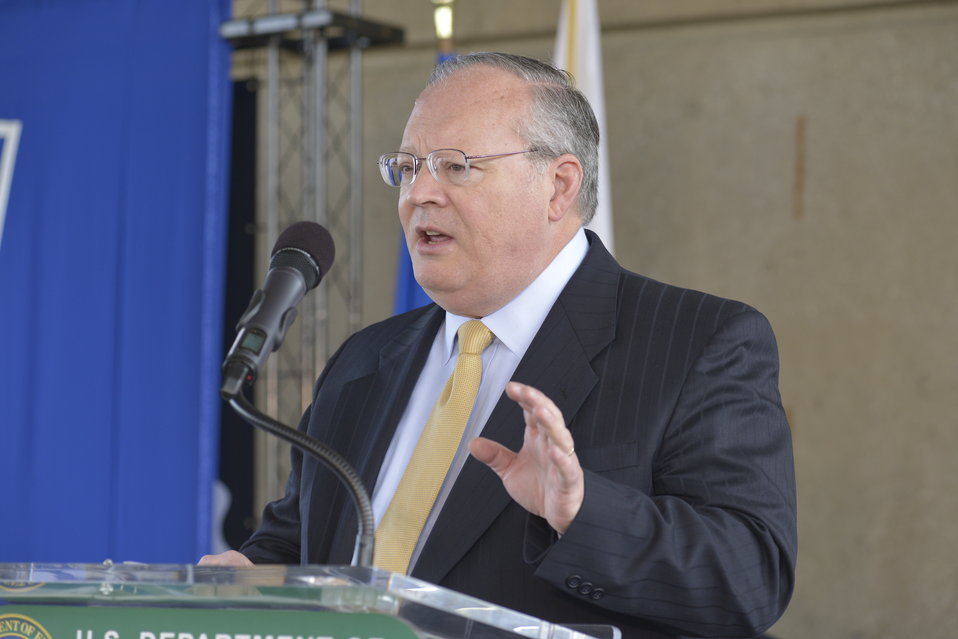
U.S Postal Services introduces a new Global: Sea Surface temperatures forever stamp at the Earth Day program at Department of Energy on April 22, 2014. ( T.Day, C.Williams, C.Anderson II, J.Colin Ph.D, Dr. K. Sullivan, K.Tobin Ph.D, W. Gicher Jr)